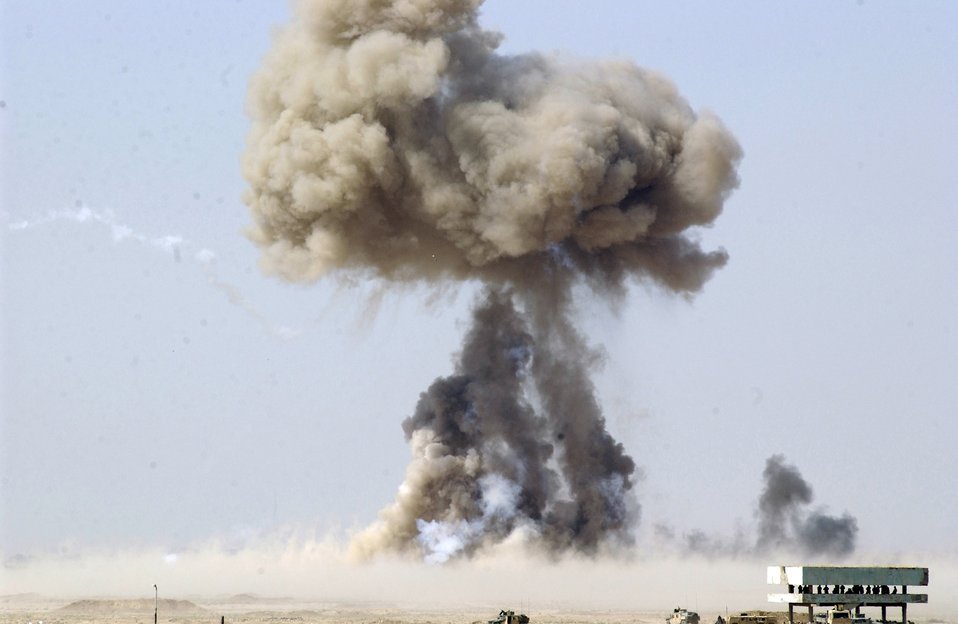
Explosive disposal

KIRKUK AIR BASE, Iraq -- Explosive ordinance disposal techinicians dispose of improvised explosive devices Sept. 21. The technicians are assigned to the 506th Expeditionary Civil Engineer Squadron.